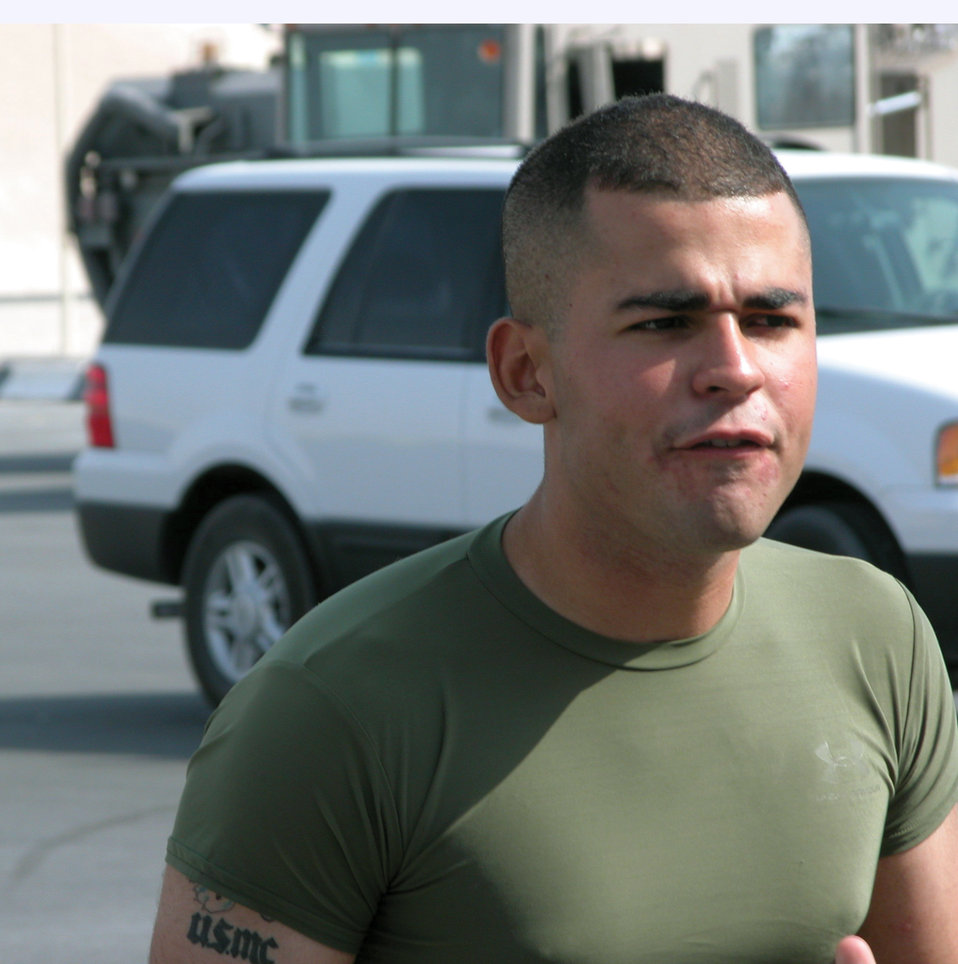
Deployed Marine teaches Aimen martial arts

SOUTHWEST ASIA -- Marine Sgt. Luis Mercado barks orders as he instructs a martial arts class at a forward-deployed location. Sergeant Mercado teaches Marines Corps-style hand-to-hand combat training to Airmen on his off-duty time.